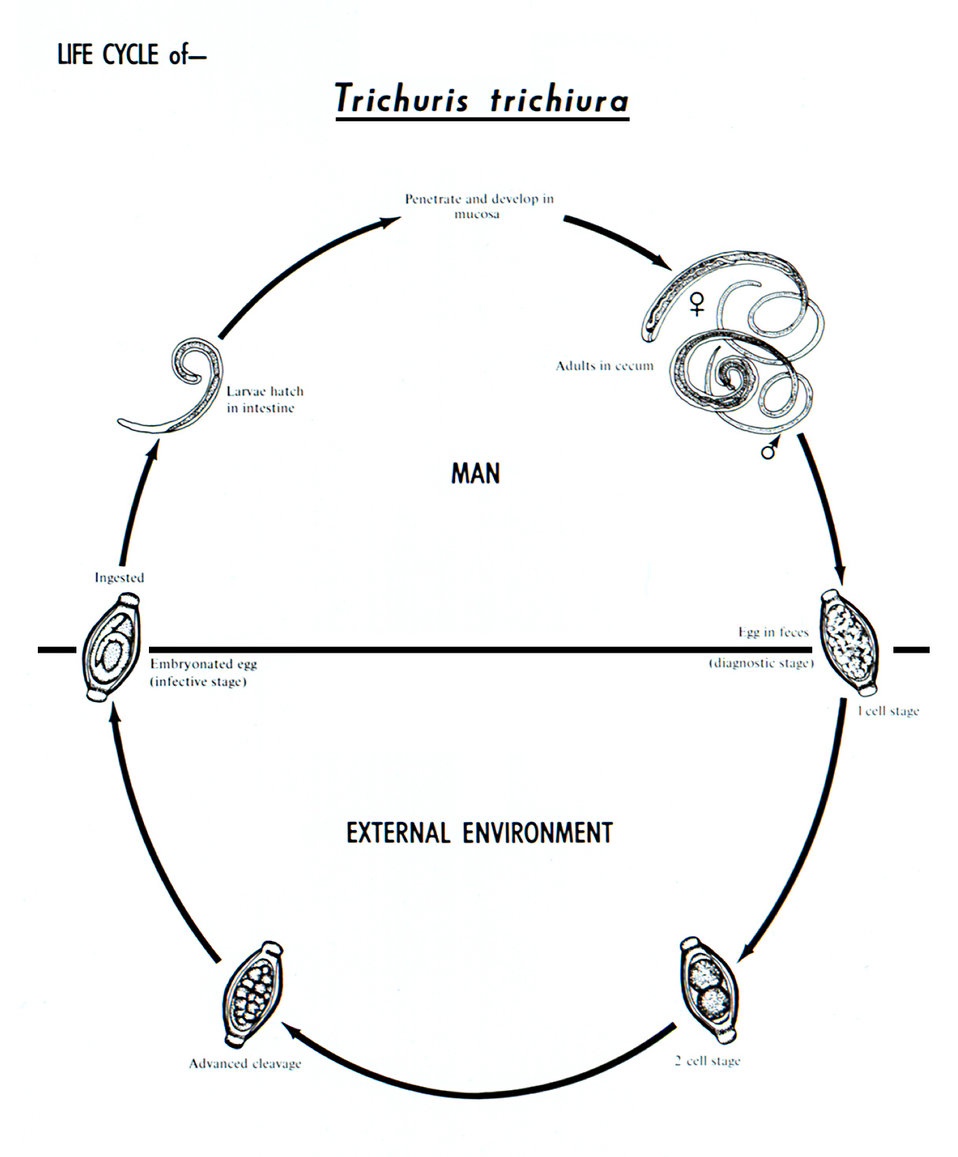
This diagram depicts the various stages in the life cycle of the nematode Trichuris trichiura.